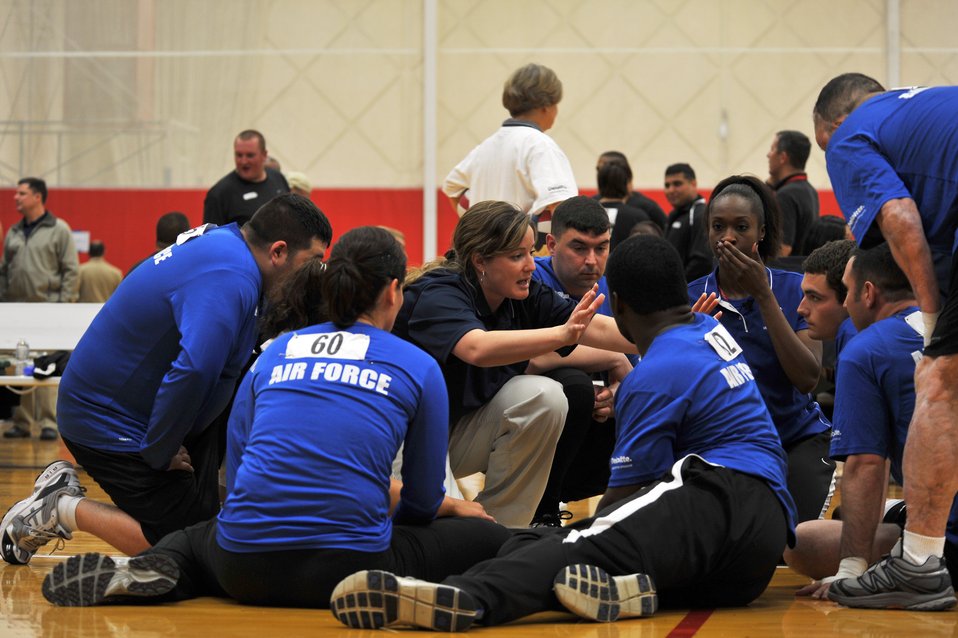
AF Volleyball

Capt. Nicki Marino and Tech. Sgt. Elisha Abercrombie talk with the Air Force team during the Warrior Games volleyball match against the Army May 12, 2010 at the Olympic Training Center, Colorado Springs. The Air Force went on to win the game 15-7. The Warrior Games competition began May 10 and finishes on May 14, 2010 at the U.S. Olympic Training Center in Colorado Springs.